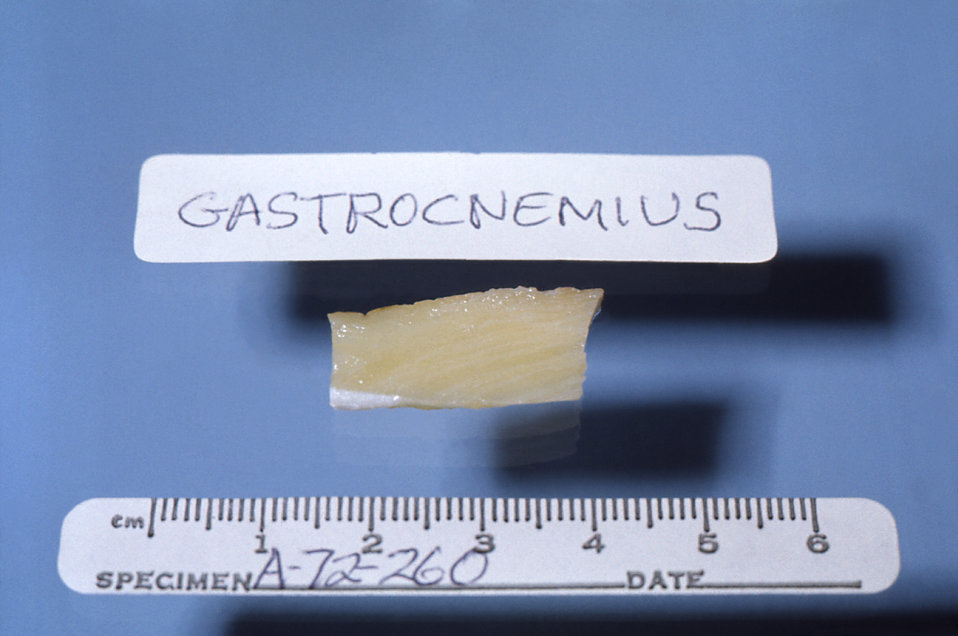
Gross pathology of skeletal muscle in fatal Duchenne muscular dystrophy